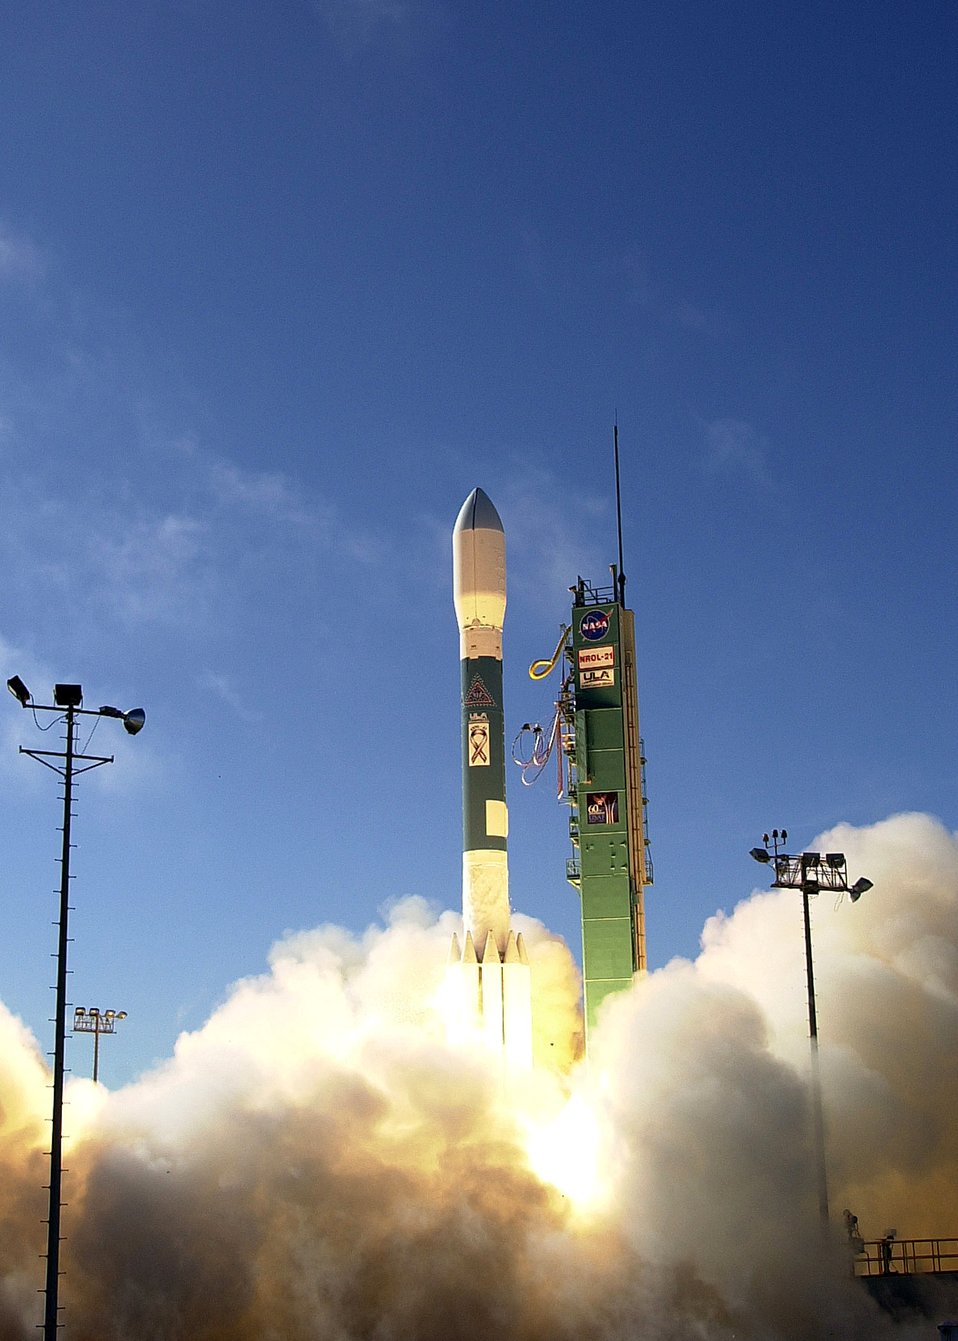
Vandenberg successfully launches Delta II

A Delta II rocket carrying a National Reconnaissance Office satellite successfully launches Dec. 14 from Space Launch Complex-2 at Vandenberg Air Force Base, Calif.